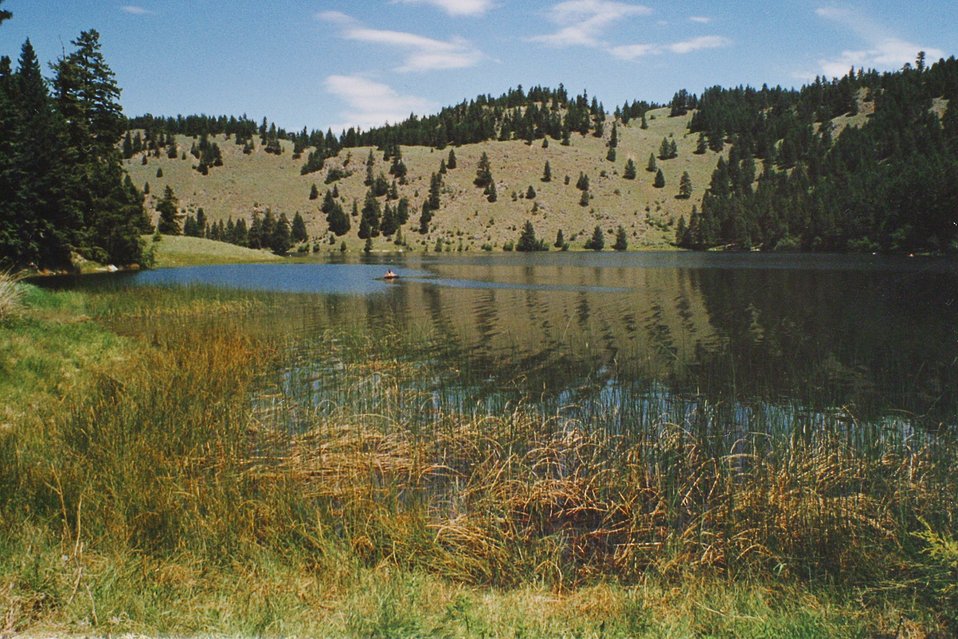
Okanogan, Chopaka, Wenatchee BLM June 1998.